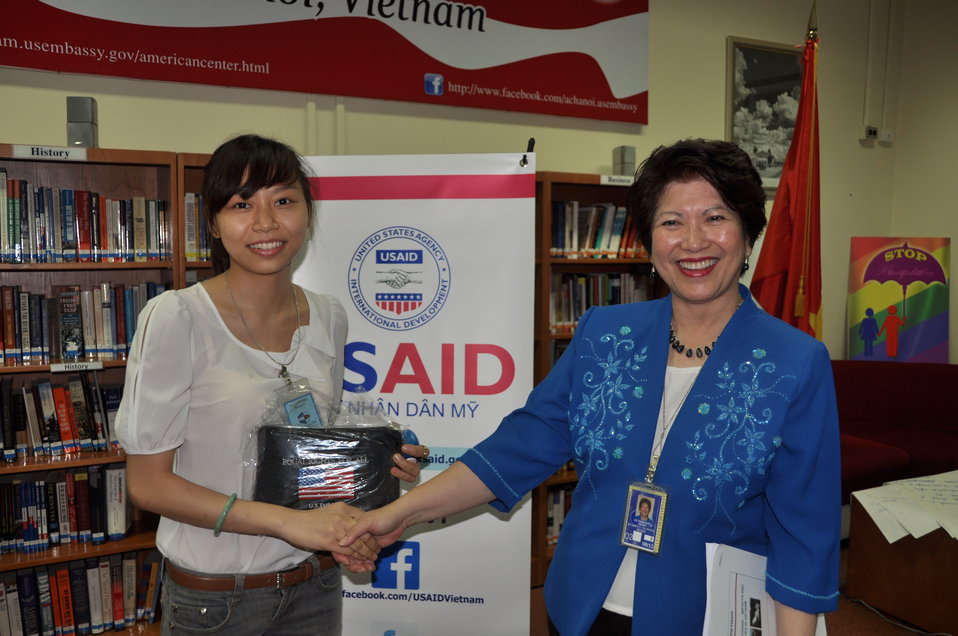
Climate Change Talk at the American Center

Hanoi, May 28, 2013.